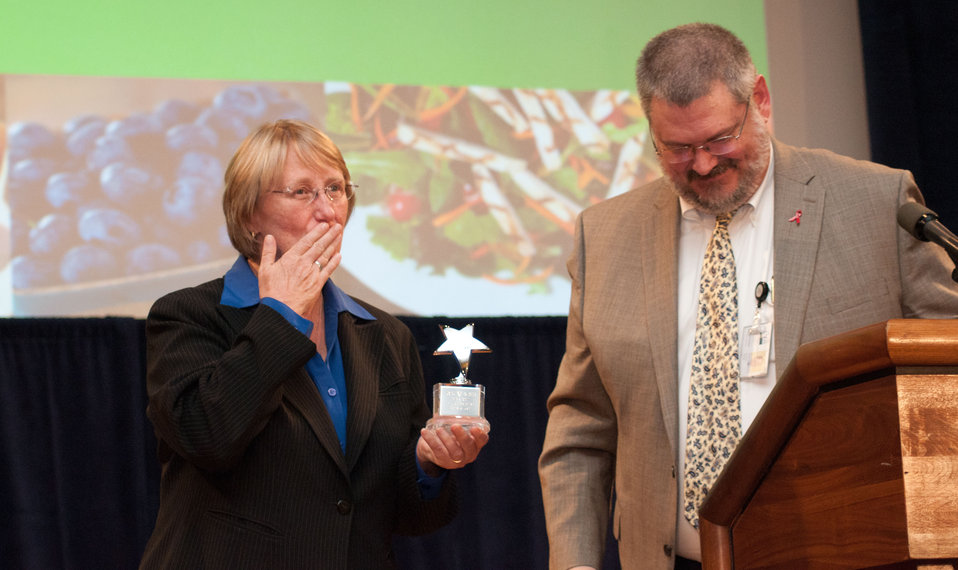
U.S. Department of Agriculture (USDA) Departmental Management (DM) Lesbian, Gay, Bisexual and Transgender (LGBT) Special Emphasis Program Manager Blake Velde (right) presented Agriculture Deputy Chief of Staff Carole Jett the 2011 USDA GLOBE Award, during the LGBT Pride Observance Program, on Thursday, June 2, 2011 in the Jefferson Auditorium, Washington, DC.